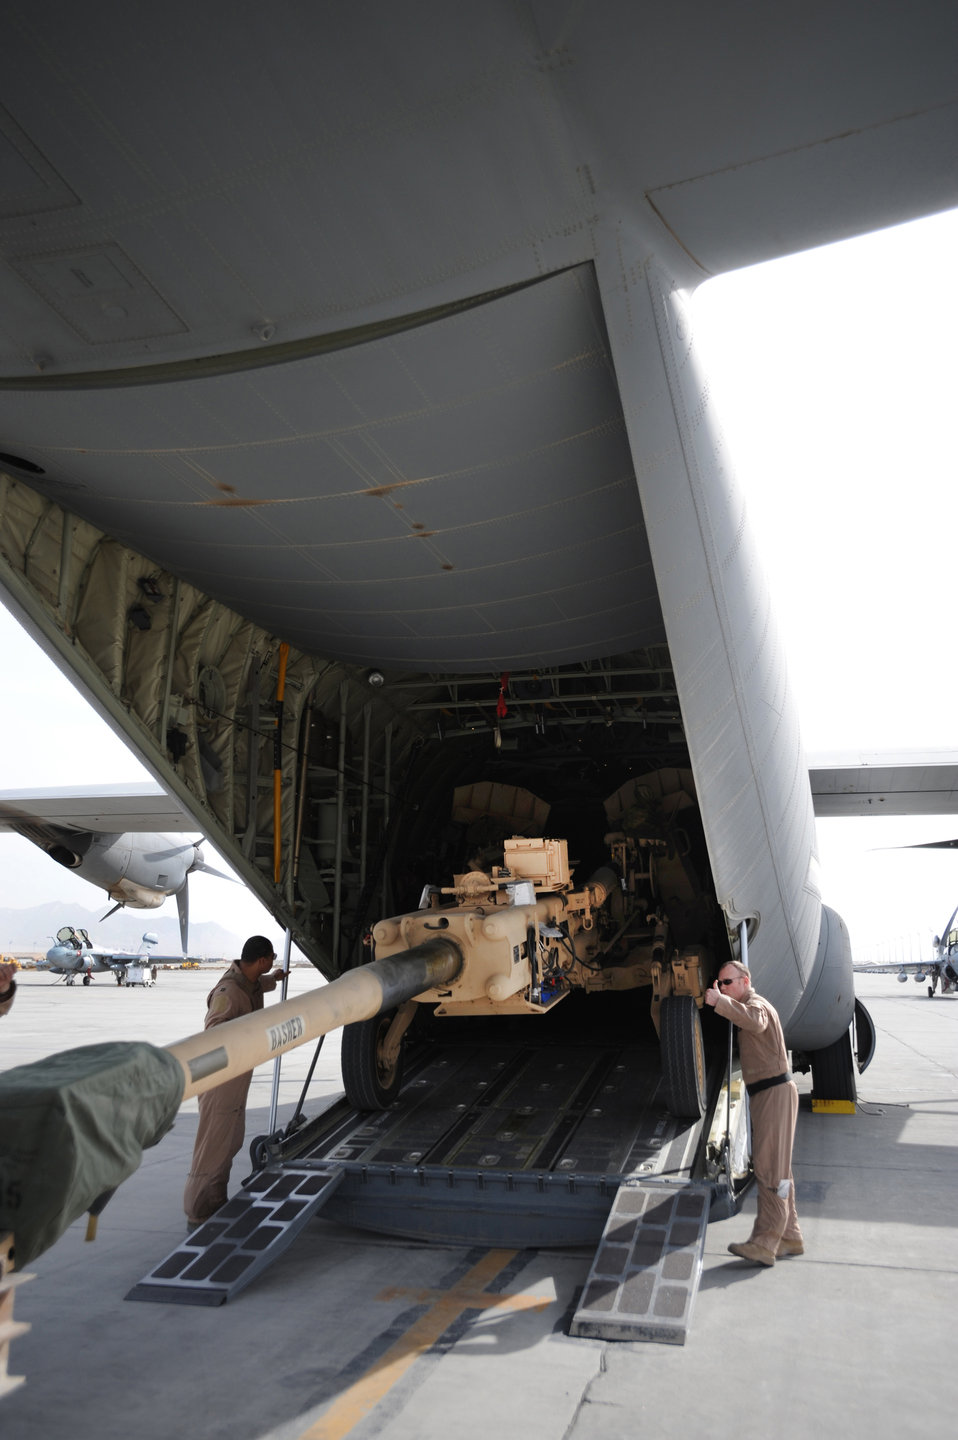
New Kandahar unit prepares for troop increase

Aircrew members load an M777 A2 Howitzer onto a C-130J Hercules March 14 at Bagram Airfield, Afghanistan. The C-130J is part of the newly assigned 772nd Expeditionary Airlift Squadron at Kandahar Airfield, Afghanistan, that has been set up to assist with the increase of U.S. troops to the region.